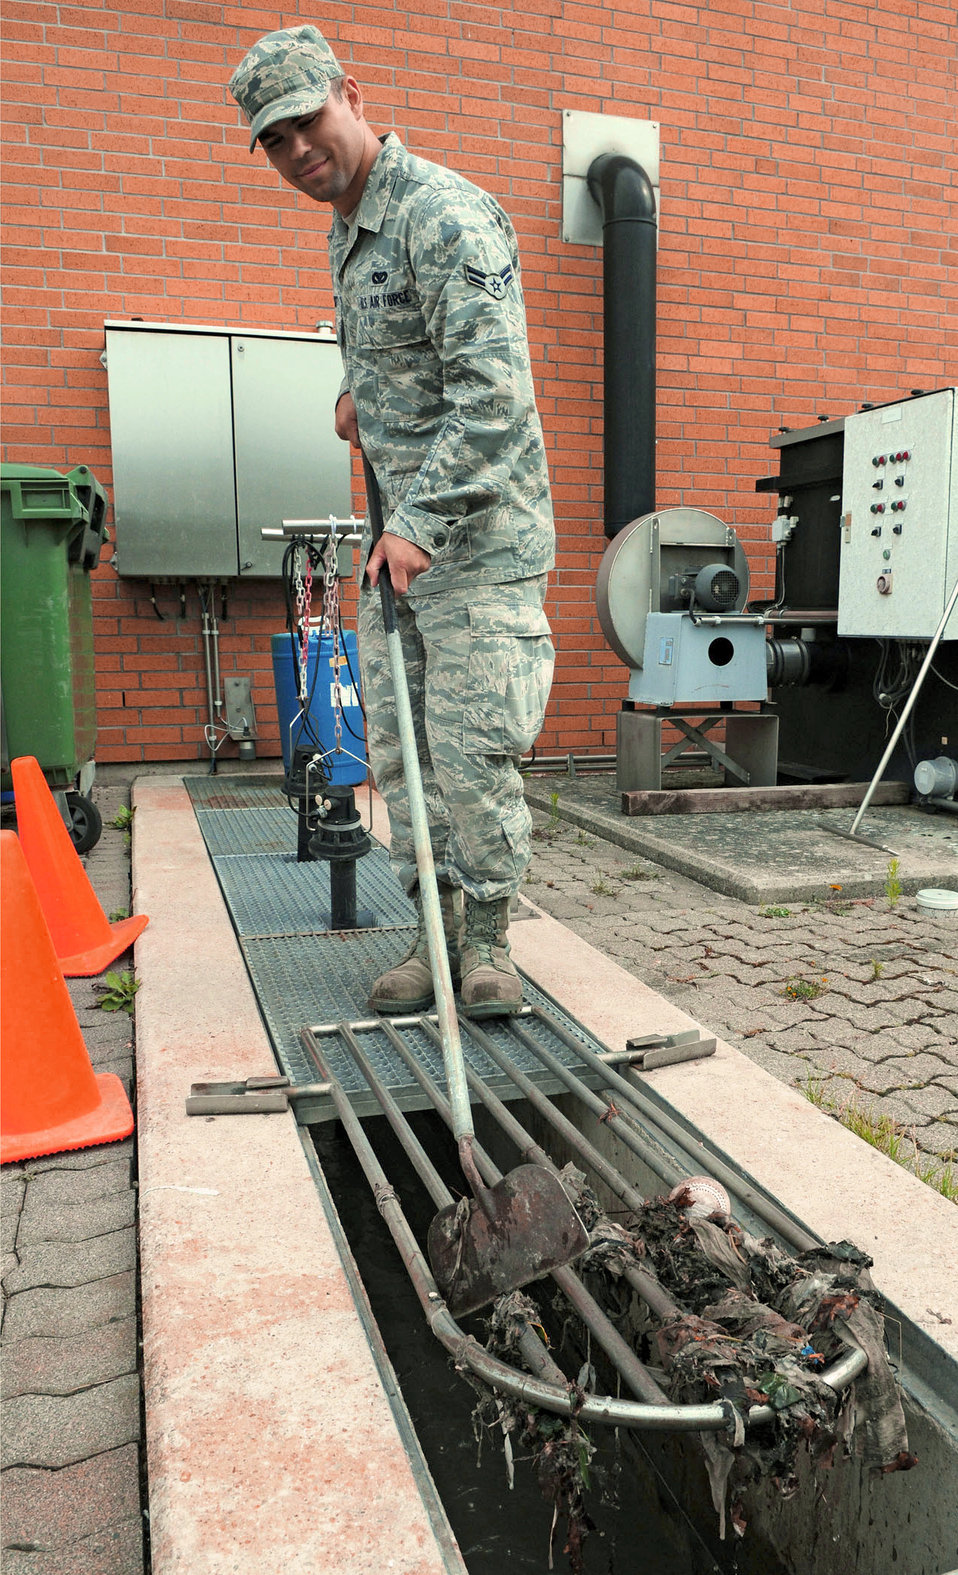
Doing a grate job

Airman 1st Class Andrew Herget clears debris from an inflow grate June 6, 2011, at the water treatment facility at Spangdahlem Air Base, Germany. Airman Herget is a water and fuel systems maintenance apprentice assigned to the 52nd Civil Engineer Squadron.